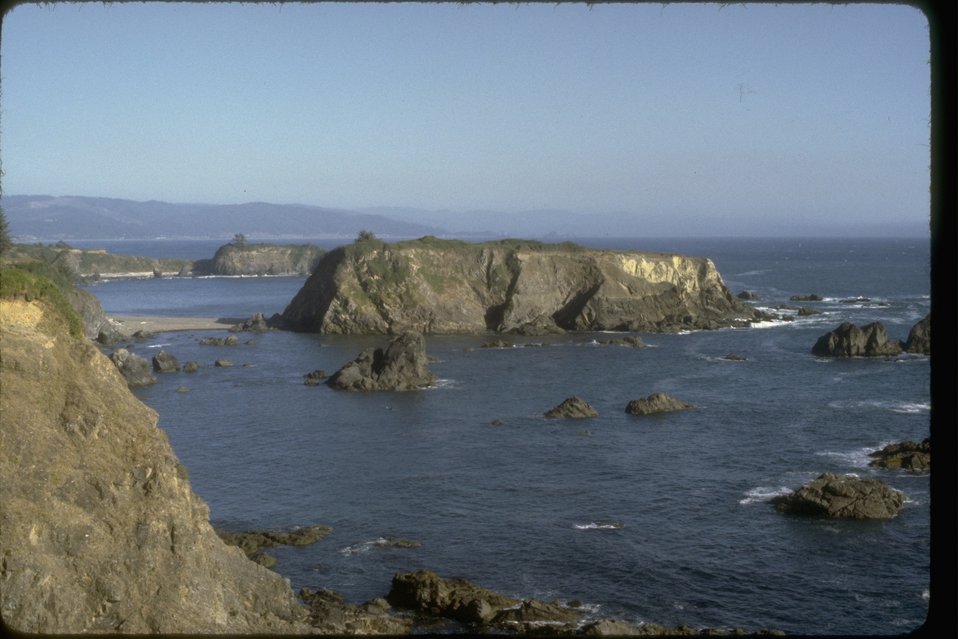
Zwagg Island Wilderness Study Area. OR 12-14